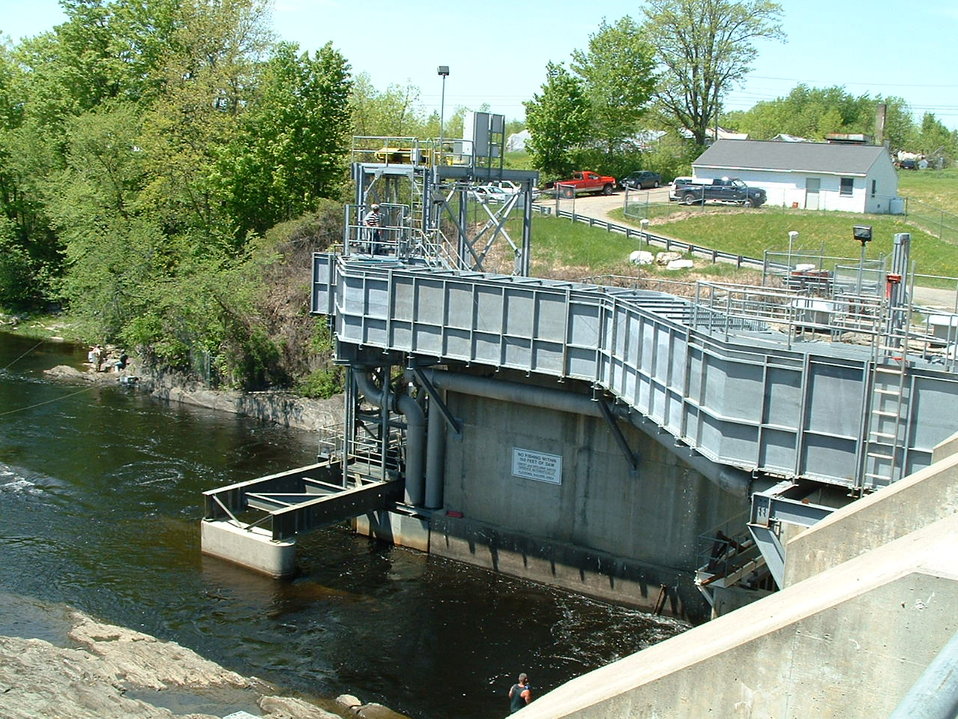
Large fish lift on Sebasticook River